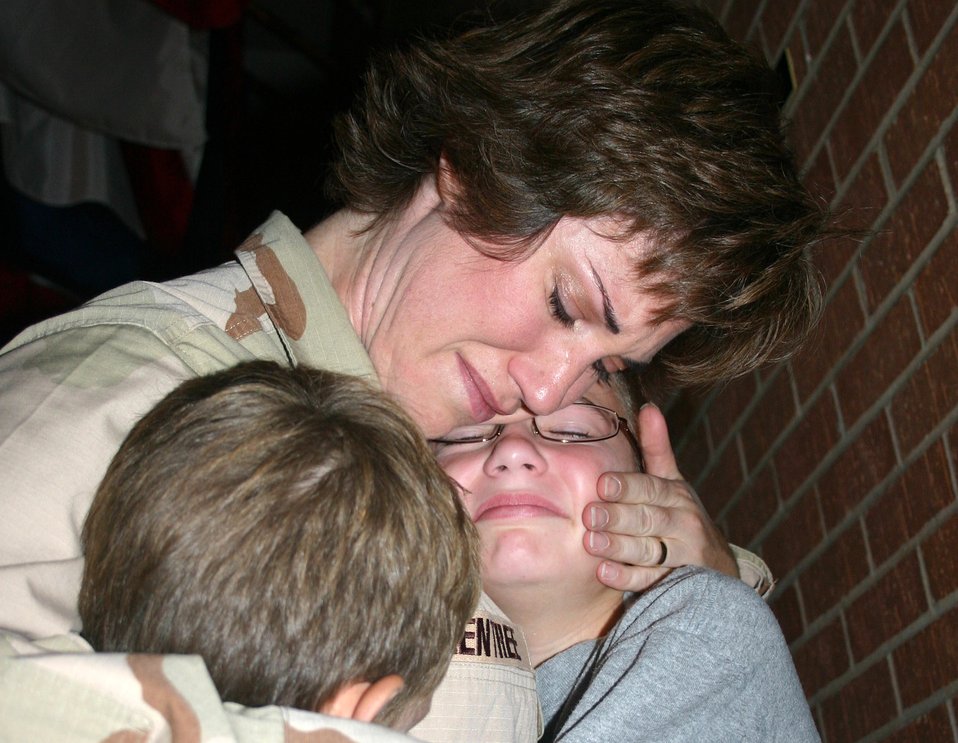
Lackland medics keep steady deployment pace

Maj. Cheryl Greentree comforts her daughter, Morgan, and son, Ryan, during the family's farewell at Lackland Air Force Base, Texas, in September. Approximately 100 Airmen from the 59th Medical Wing deployed in support of operations Enduring Freedom and Iraqi Freedom. Major Greentree is assigned to the 859th Surgical Operations Squadron.